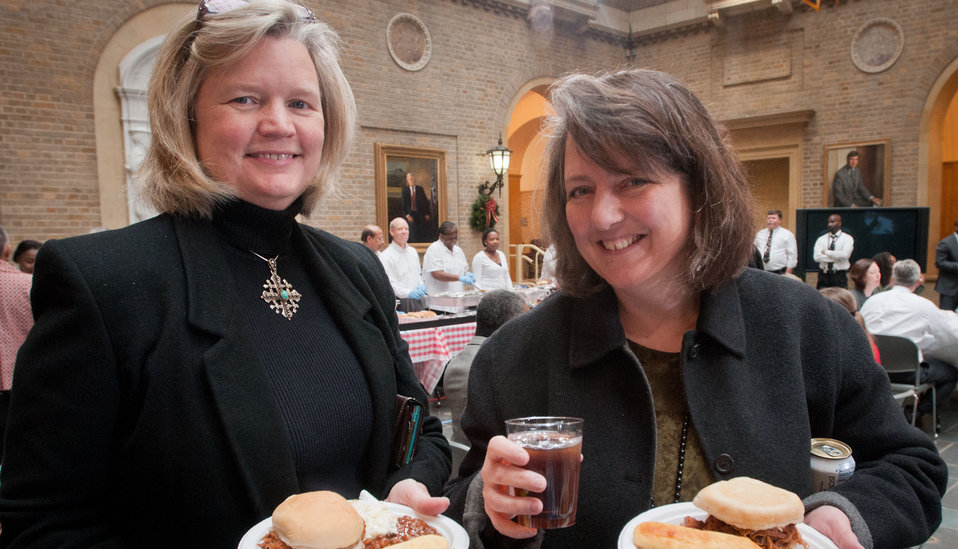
Agriculture Deputy Secretary Kathleen Merrigan (right) and her Chief of Staff Suzanne Palmieri made donations for their pulled pork sandwich lunch plates at the Combined Federal Campaign (CFC) fundraiser at the U.S. Department of Agriculture (USDA) headquarters, on Monday Dec. 3, 2012, in Washington, D.C. The event featured a 'Pie Smash” event where attendees, on personal time, donate money to throw non-dairy whipped 'cream' pies at Agriculture leadership. Other fund raising activities at this event included a silent auction, candy packets, bake sale, and pulled-pork sandwich lunches for donations. Additionally, information tables for Red Cross and Canine Partners for Life provided people with answers about the organizations and how to participate.